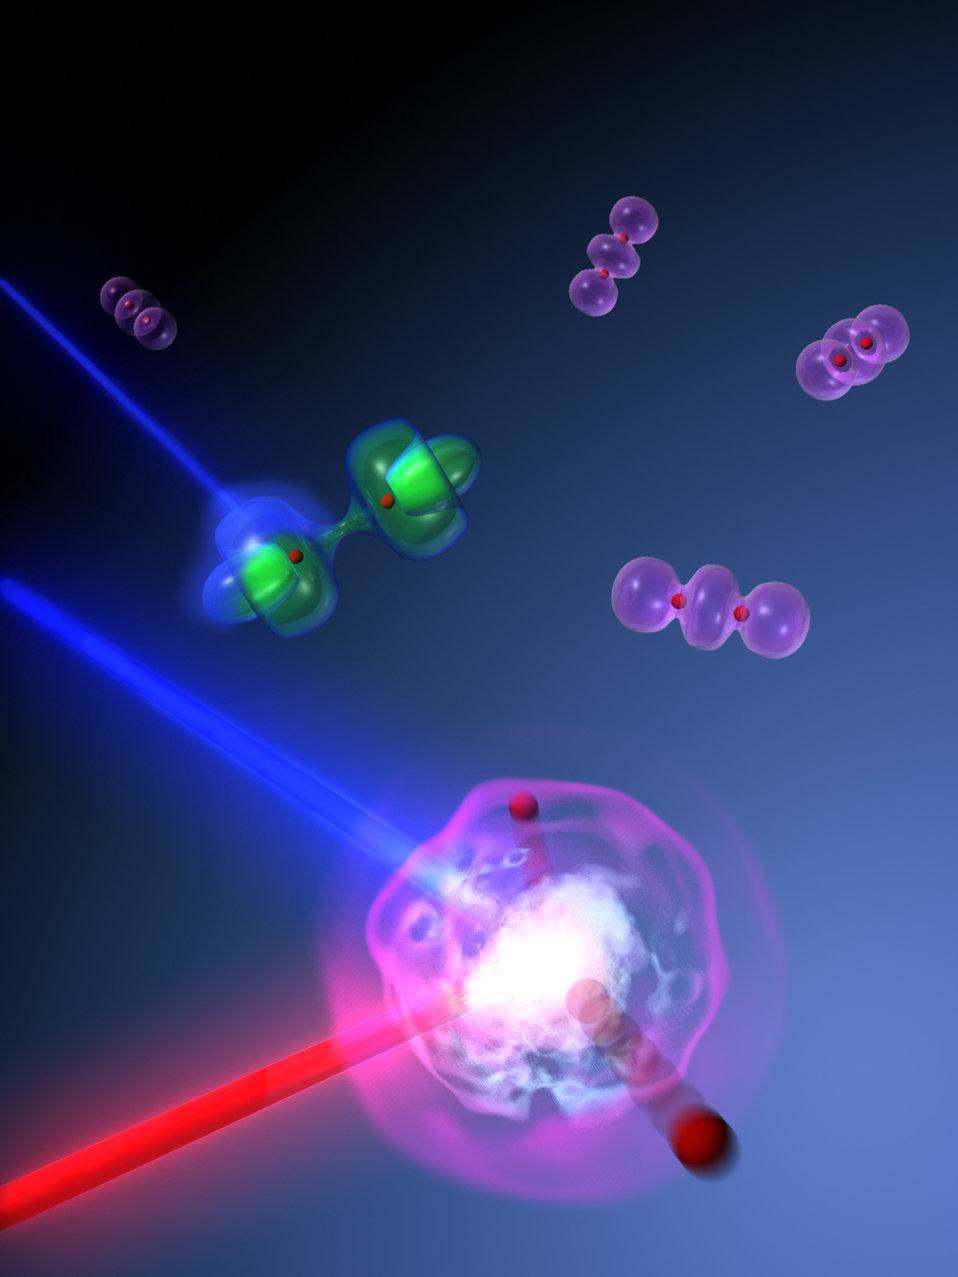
Lasers may aid missile defense, engine crack detection

Ultrafast flashes of X-rays can eject an electron from a molecule, leaving the molecule in a super excited state that eventually causes it to break apart. The interaction of atoms and molecules is both useful for making coherent X-rays which, in the future, may show previously undetectable cracks in jet turbine blades.